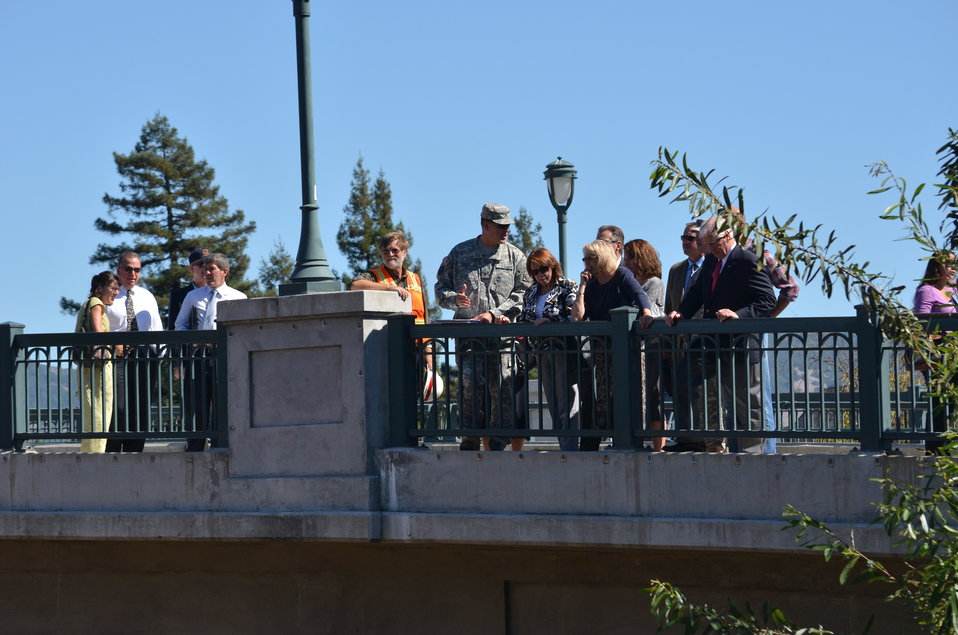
Tour of Napa flood risk reduction efforts

The tour stands upon a recently raised bridge to view construction efforts in the Napa Creek. (US Army Corps of Engineers/DeDe Cordell)